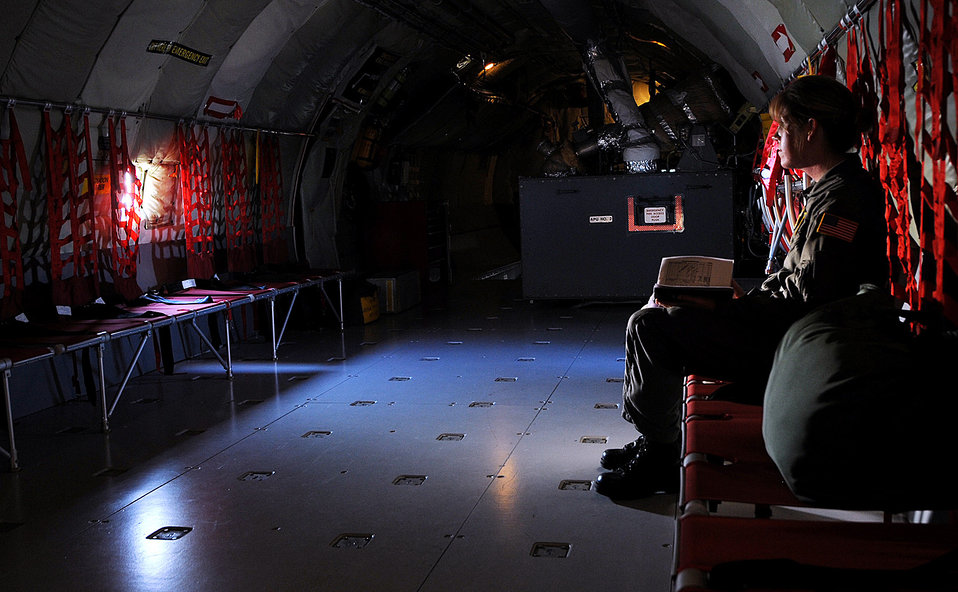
Photographer captures mission

On a KC-135 Stratotanker refueling mission, Tech. Sgt. Michelle Desrochers rides out the take off from March Air Reserve Base, Calif. The aircrew is from the 336th Air Refueling Squadron, and she is an aerial still photographer from the 4th Combat Camera Squadron. Both squadrons are from the 452nd Air Mobility Wing at March ARB.